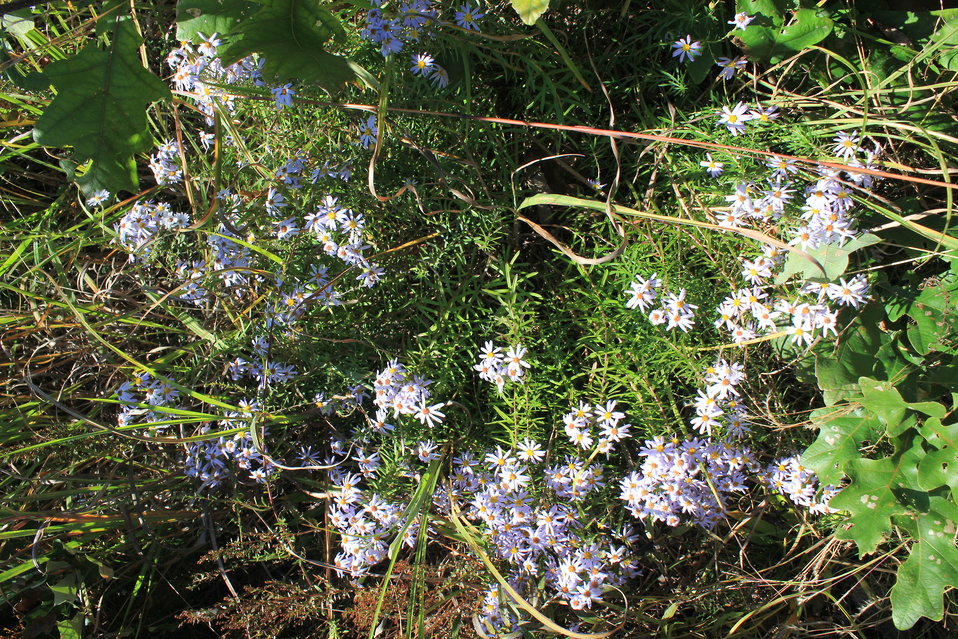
Flaxleaf Whitetop Aster

Photographed at Wertheim National Wildlife Refuge.